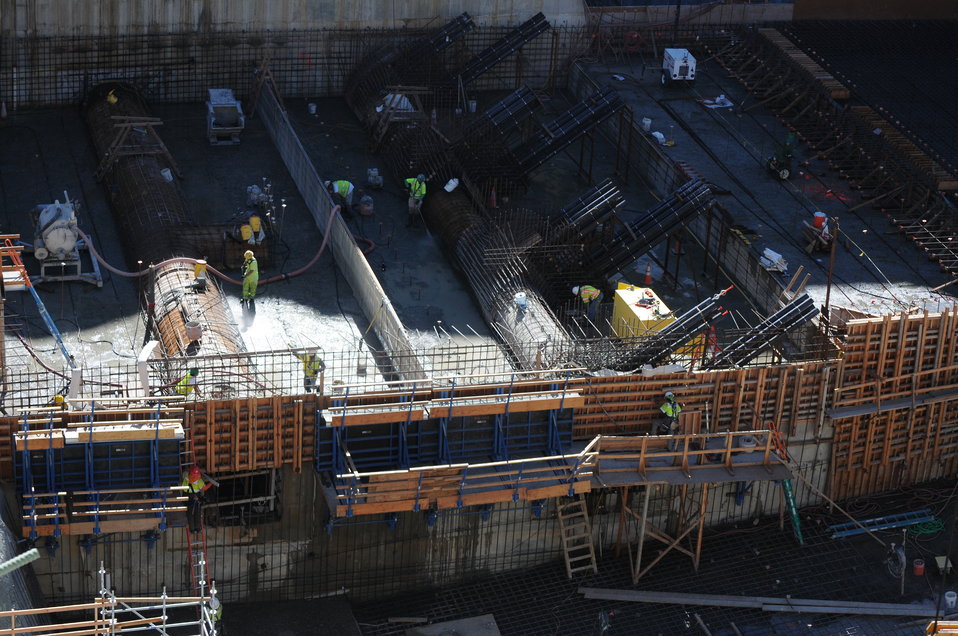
House of Rep. staff member visits Folsom Dam Project

Contractors work on reinforcing the tunnels and stairwells of a new control structure Oct. 19, 2012, part of the Folsom Dam auxiliary spillway in Folsom, Calif. Once complete, the structure will be 146 feet tall, equal to the height of the Statue of Liberty. The U.S. Army Corps of Engineers in cooperation with the U.S. Bureau of Reclamation, the Central Valley Flood Protection Board, and the Sacramento Area Flood Control Agency, are building the spillway to improve the safety of the existing dam and reduce flood risk for the greater Sacramento area.